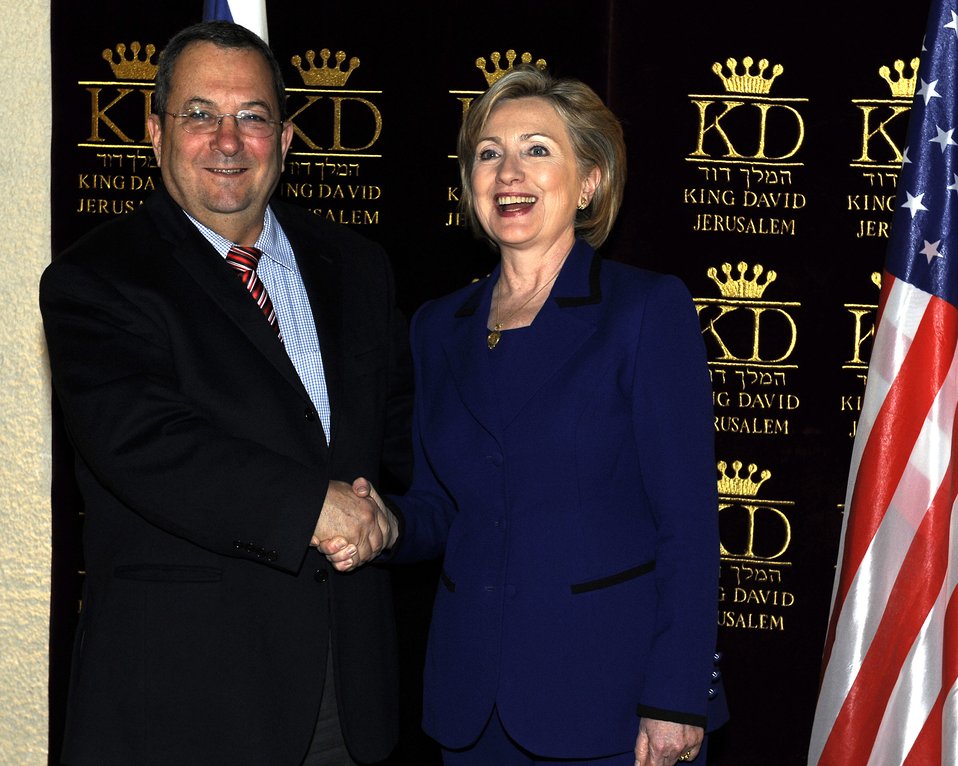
Secretary Clinton with Israeli Defense Minister Ehud Barak at the King David Hotel, Jerusalem, March 3, 2009.